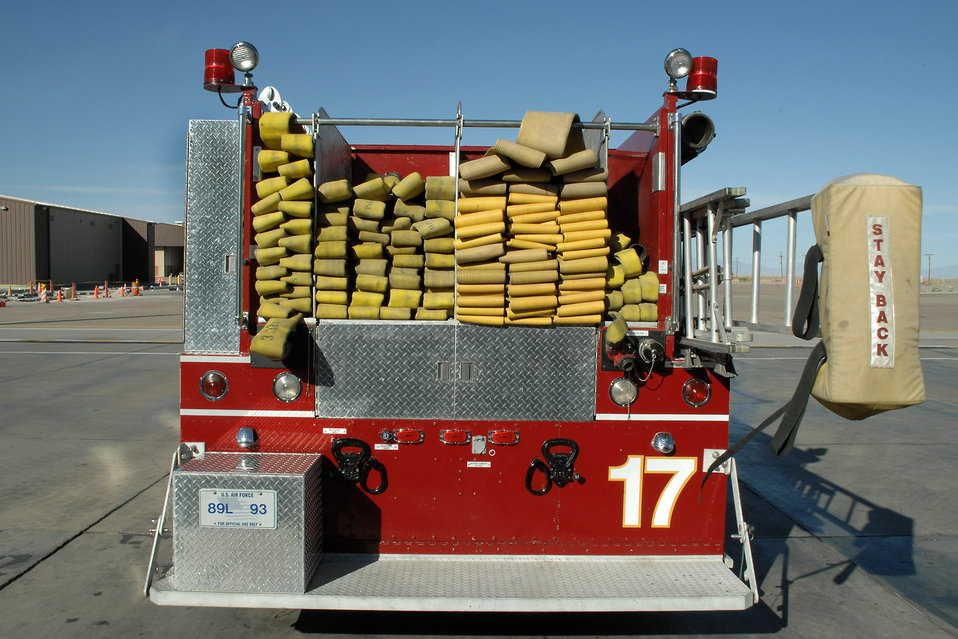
Holloman units combine to refurbish fire truck

The backside of the truck was modified to make room for more storage compartments in March at Holloman Air Force Base, N.M. Also, added to each side of the truck where F-22 Raptor boarding ladders.